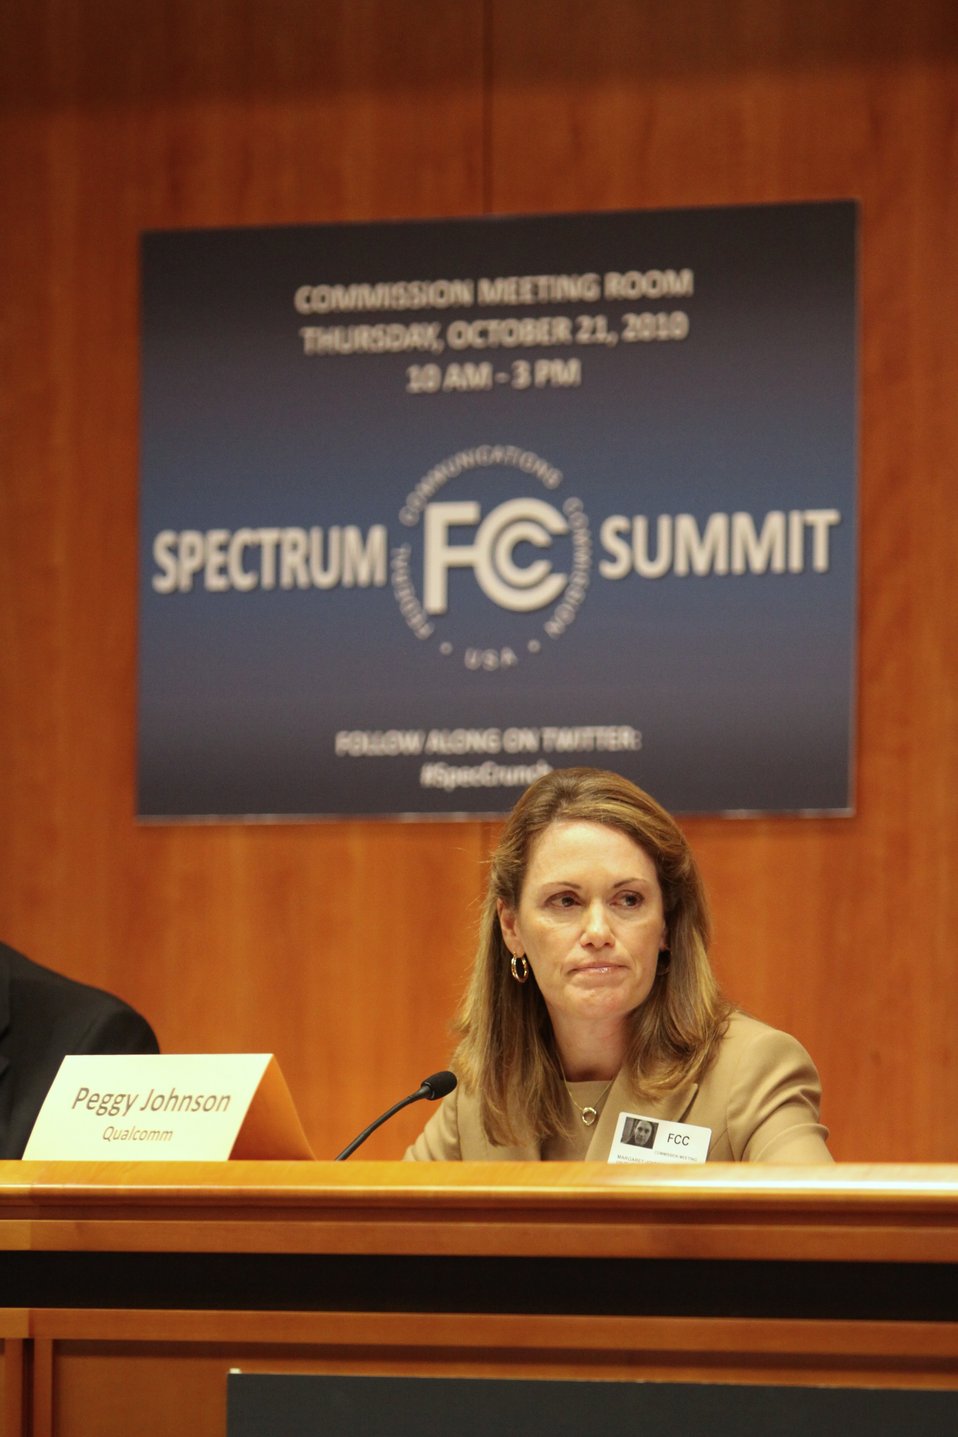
Peggy Johnson, EVP Americas, Qualcomm participates in Economic Imperative for New Broadband Spectrum Panel